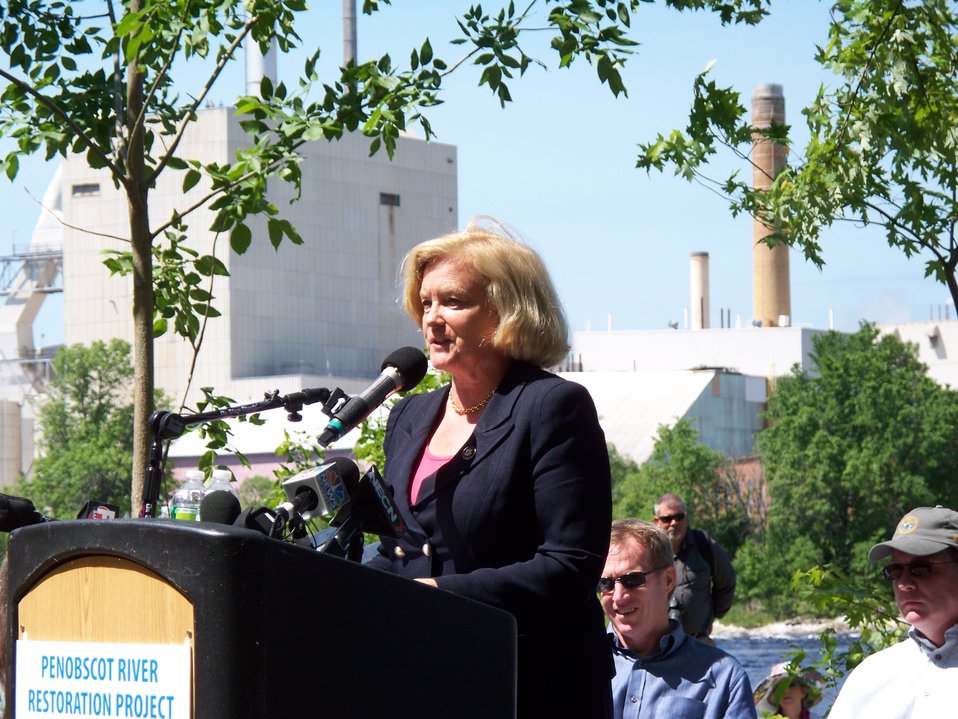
U.S. Congresswoman Chellie Pingree